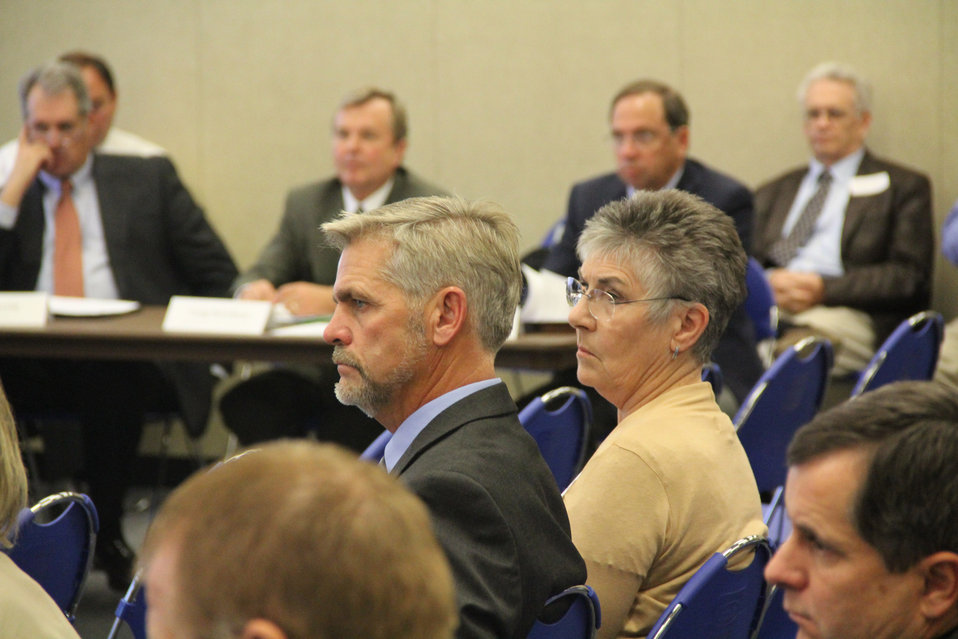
Attendees listen to speakers discuss how drought conditions are impacting grain and livestock producers as well as rural communities at the Federal Drought Meeting in Omaha, NE on Tuesday, Oct. 9, 2012. The U.S. Department of Agriculture (USDA) is partnering with local, state and federal partners to hold the workshops, working closely with the Department of Commerce, the Small Business Administration and the Federal Emergency Management Agency to facilitate these meetings.